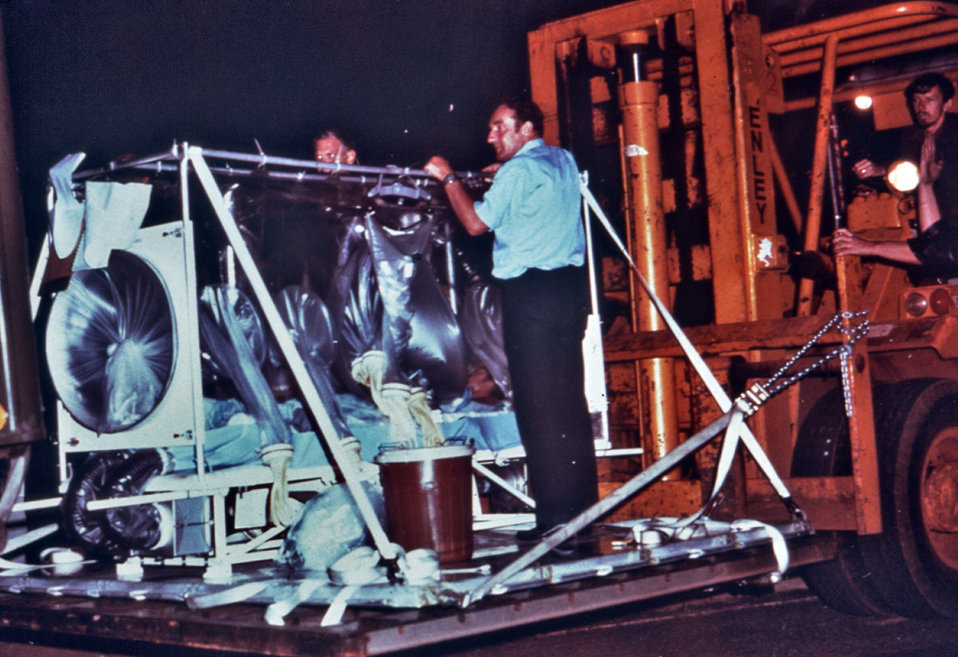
This photograph shows a suspected Ebola patient being moved from a plane in Pretoria, South Africa during the Zaire outbreak of 1976.